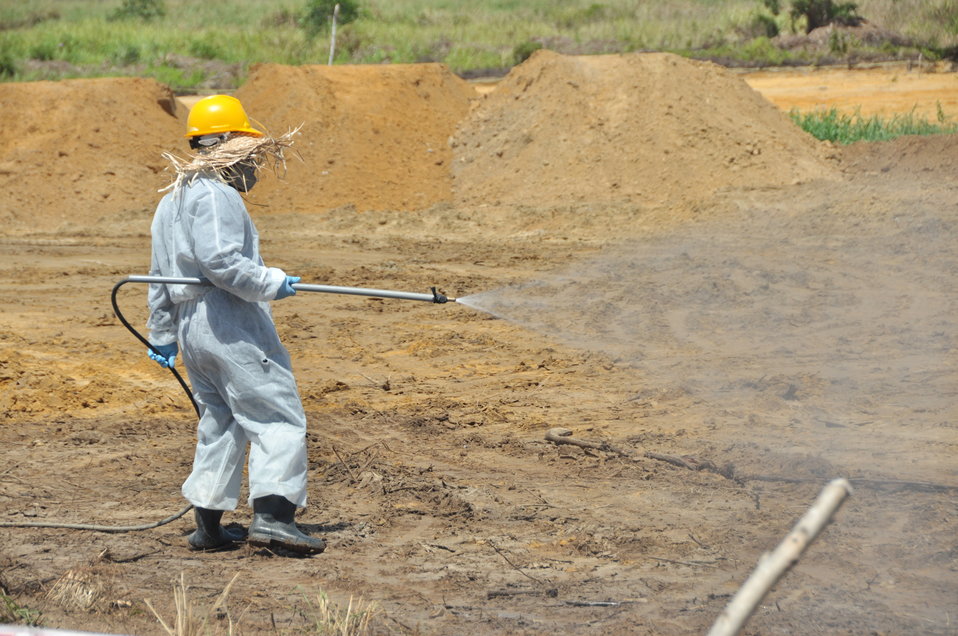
Environmental Remediation Progress at the Danang Airport site

Progress at the Remediation of Dioxin Contamination Project Site

Danang, Vietnam, June 5, 2013